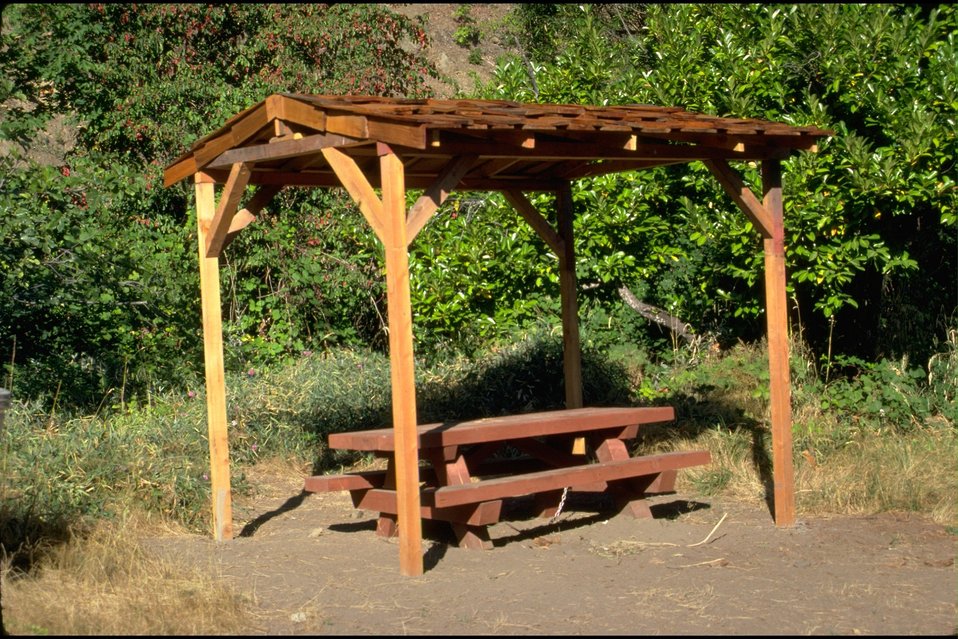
Rogue River - Carpenter's Island, BLM Recreation Site Picnic Shelter. Hellgate Recreation Area.